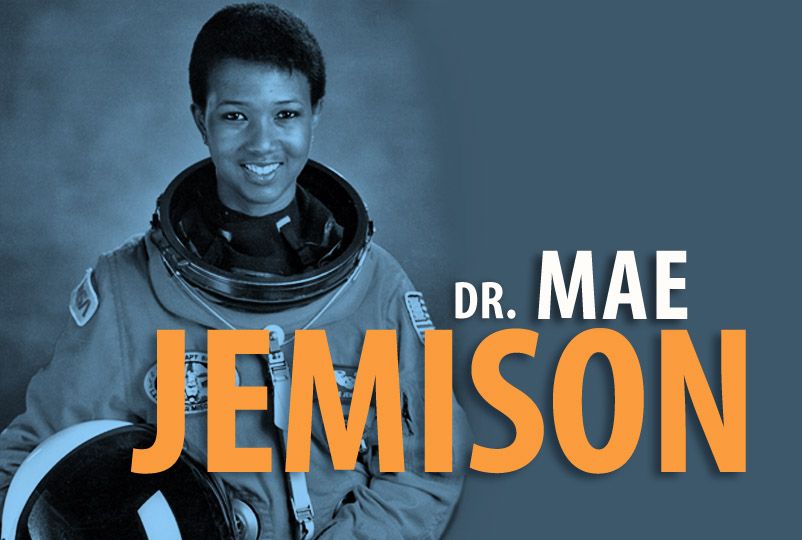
Dr. Mae Jemison